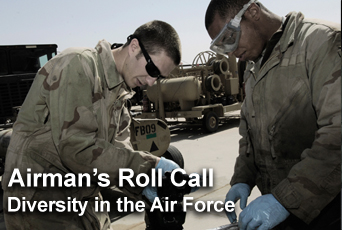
Airman's Roll Call highlights diversity in the Air Force

This week's Airman's Roll Call focuses on Airmen being prepared to work with, or fight against, military forces and people of differing cultures and views.